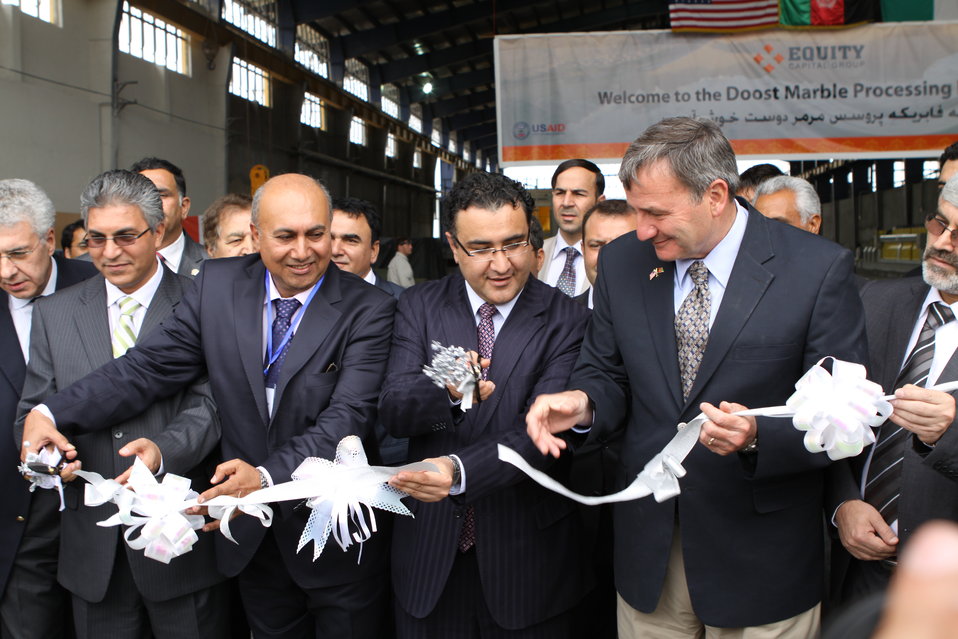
100525 Hirat Marble Conference 069